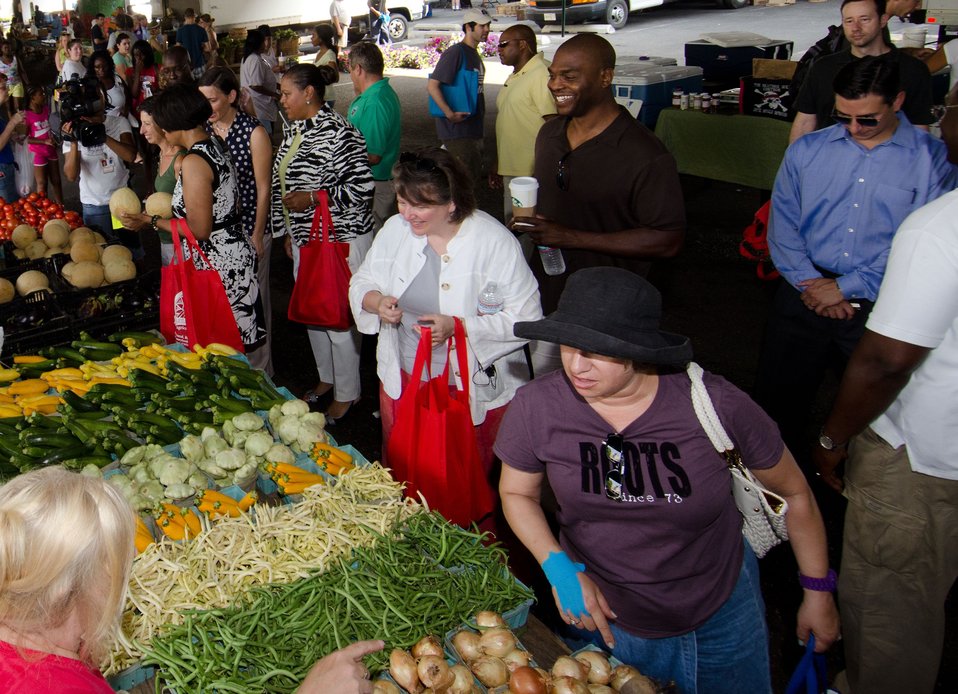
Merrigan at MD Farmers Market in July 2012 USDA photo

Agriculture Deputy Secretary Kathleen Merrigan (center, white jacket) buys produce at the Baltimore farmers market in Baltimore, MD., on July 8, 2012. The mid-Atlantic region saw double-digit growth in its listings in the National Farmers Market Directory. Maryland added 76 new market listings alone.